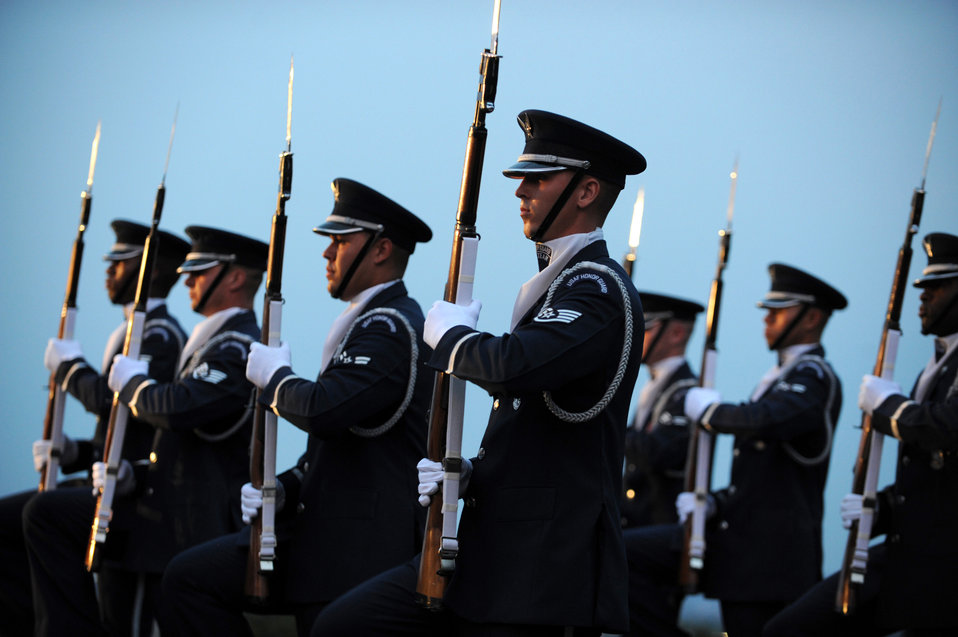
Air Force Band

U.S. Air Force Honor Guard Drill Team performs at a U.S. Air Force Band concert at the Air Force Memorial on August 24, 2012, in Washington D.C. Throughout the summer months of June, July, and August, the band's performing ensembles present free outdoor concerts at historic venues in our nation's capital for Washington area residents, as well as for visitors from around the world.